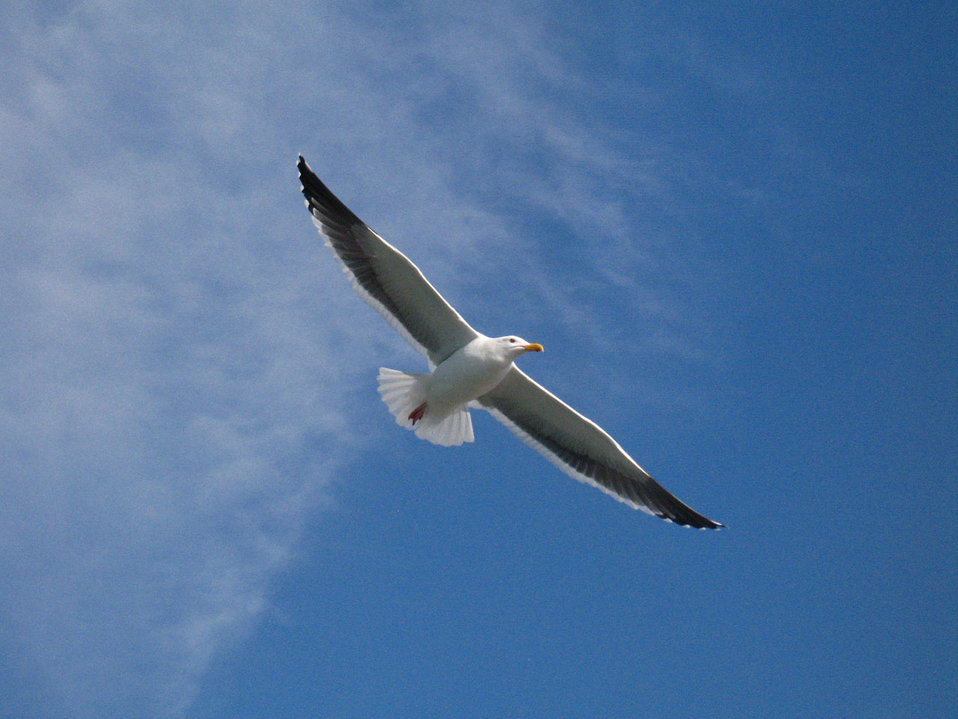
Seagull

Shot on the huntington beach pier, huntington beach, ca.